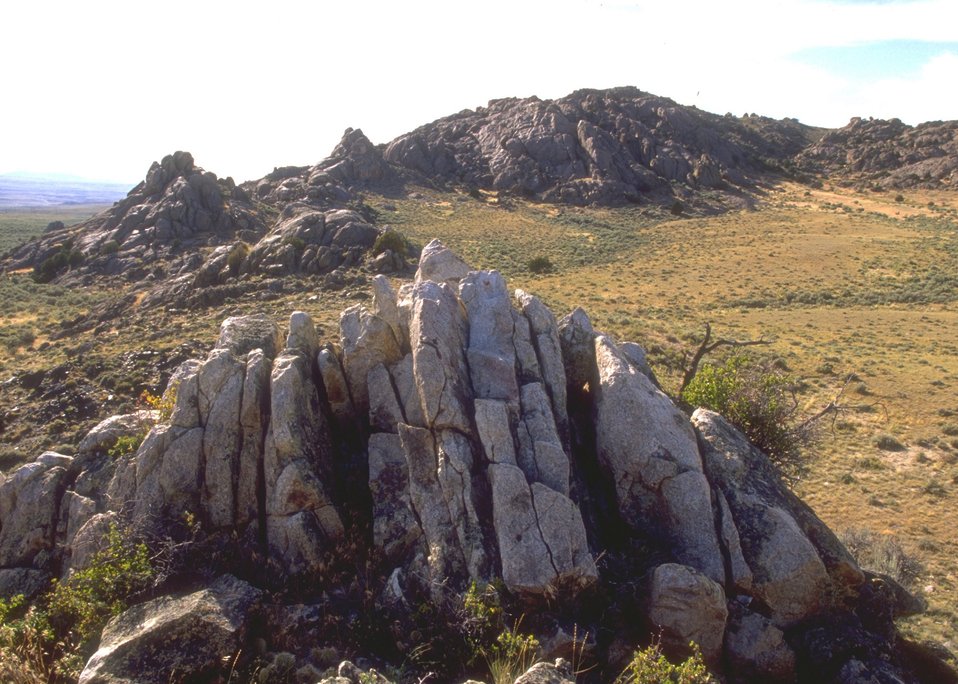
Landscape along the Alcova/Seminoe Back Country Byway, Rawlins Field Office.